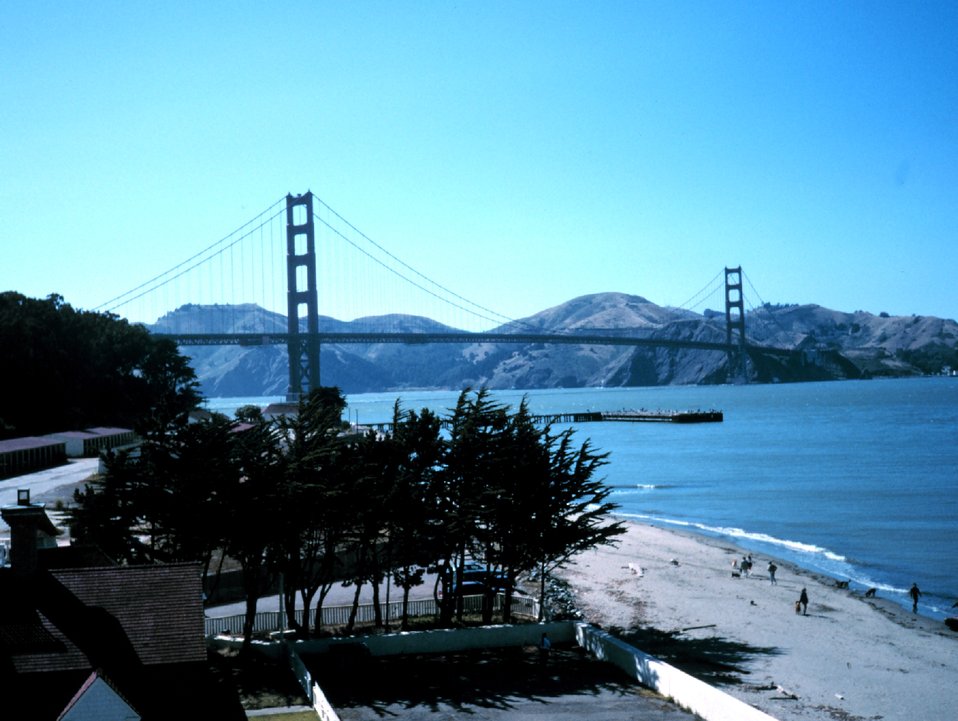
The Golden Gate Bridge as seen from atop NOAA's Gulf of the Farallones National Marine Sanctuary Office at the Presidio, San Francisco.